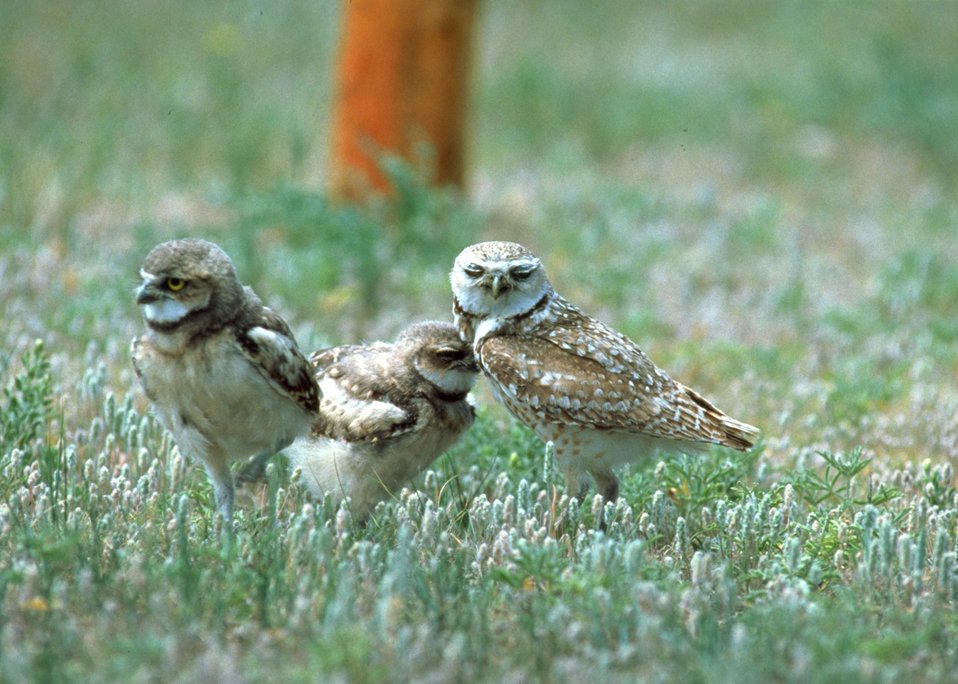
Burrowing Owls